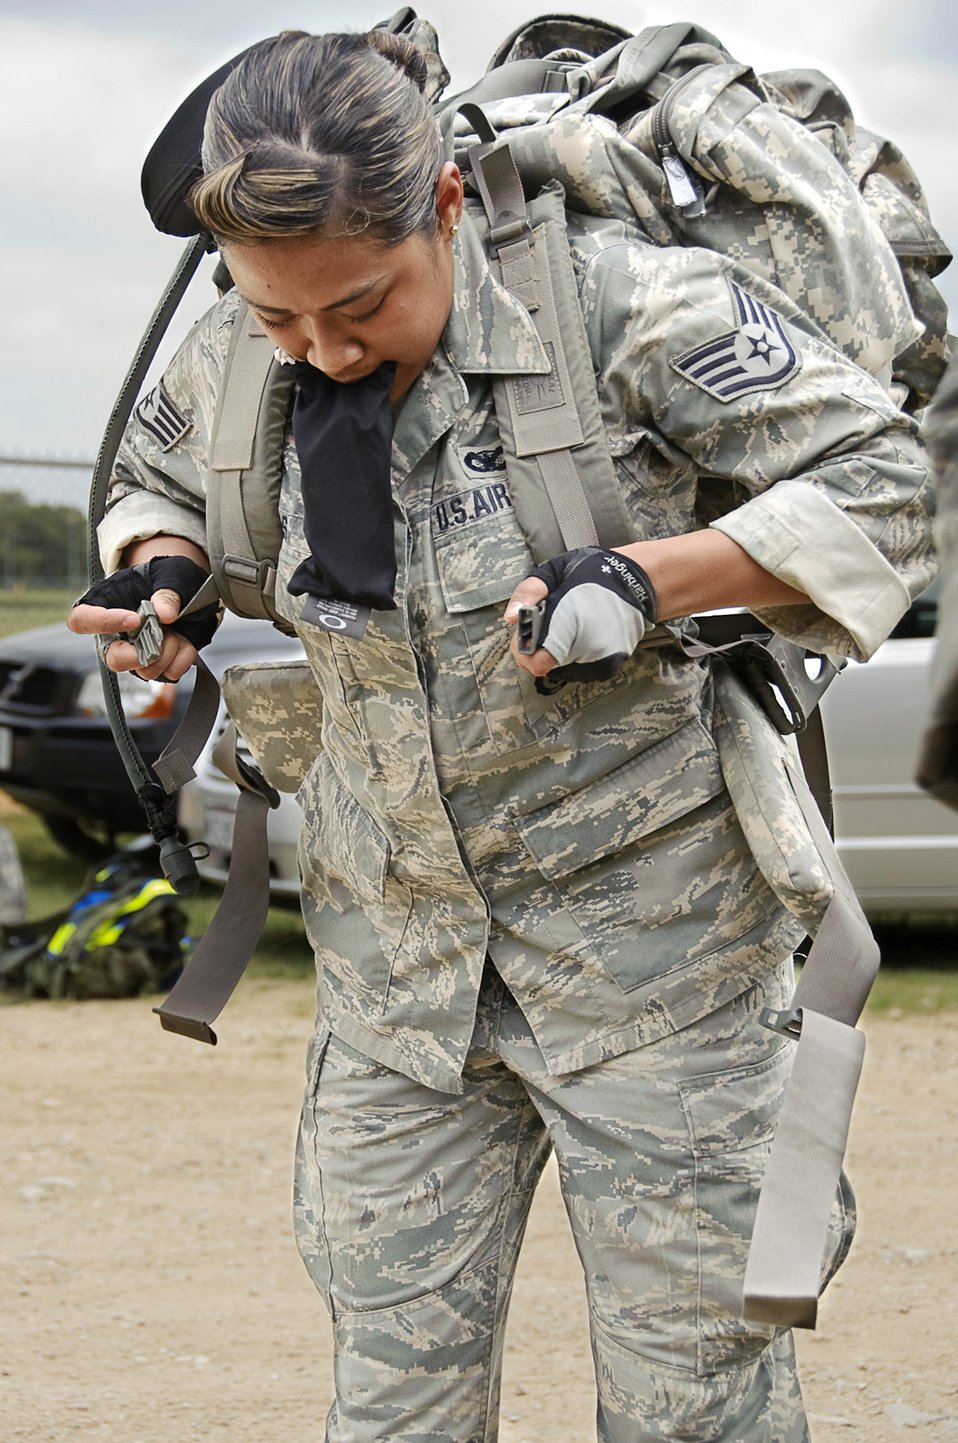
National Police Week 2010

Staff Sgt. Michelle Casas tightens the straps on her pack while transitioning from the obstacle course into a three-mile ruck march May 12, 2010, at Camp Bullis, Texas. The event was part of National Police Week and required participants to carry at least 45 pounds in the pack. Sergeant Casas's team placed third with a time of 1:08:16. She is with the 902nd Security Forces Squadron at nearby Randolph Air Force Base.